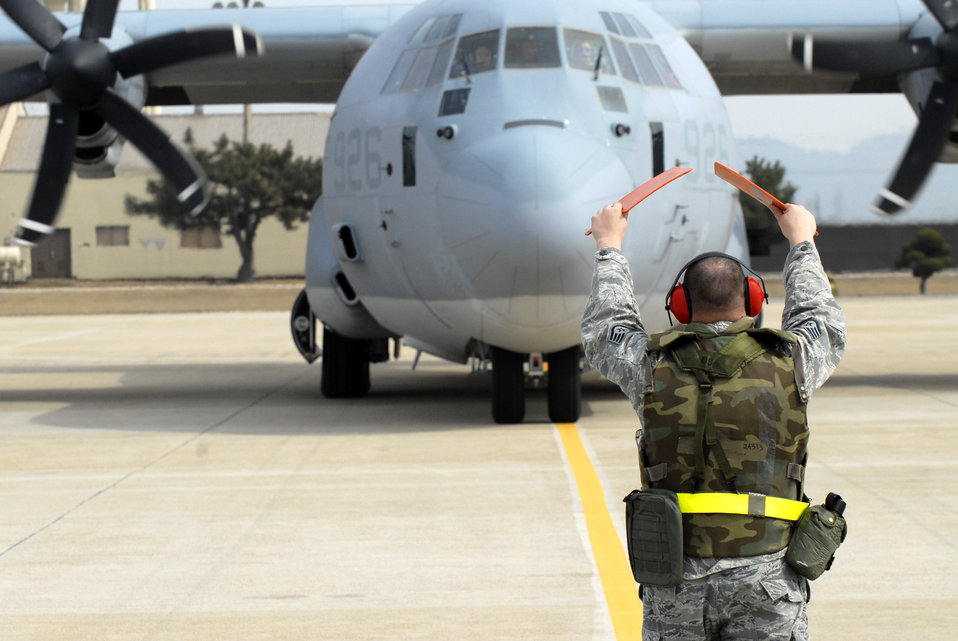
Marines arrive in Kunsan for exercise

Staff Sgt. Daniel Jenkins guides a Marine Corps KC-130J Super Hercules from Marine Air Station Futenma from Japan to its parking space Feb. 23 at Kunsan Air Base, South Korea. The Marines will support Exercise Key Resolve, giving Kunsan AB Airmen a chance to practice accepting follow-on forces during the 8th Fighter Wing's oerational readiness exercise. Sergeant Jenkins is assigned to the 8th Maintenance Squadron.